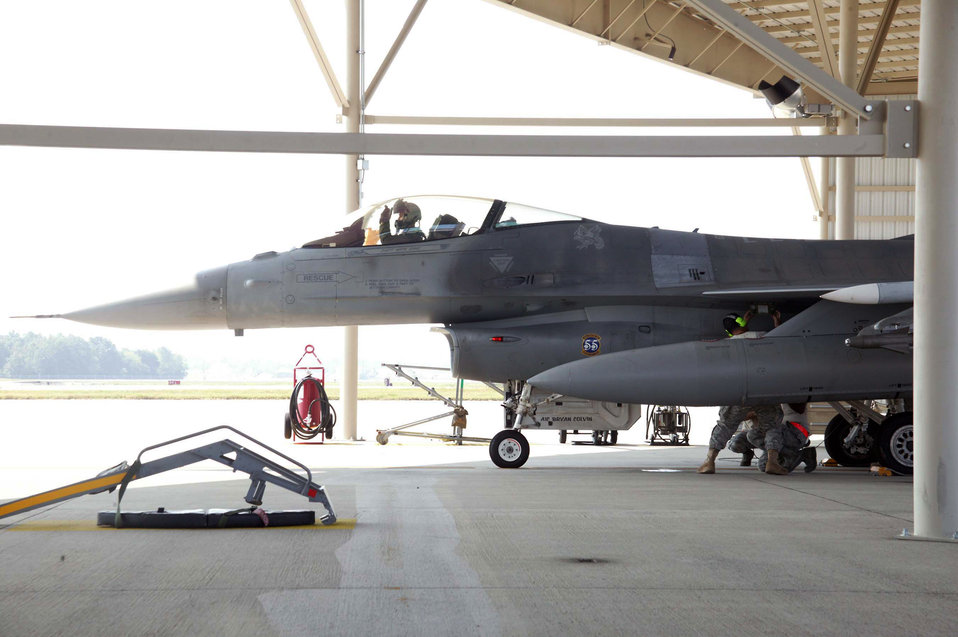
Shaw Airmen train with South Carolina Civil Air Patrol

Capt. Dave Snodgrass prepares for an F-16 Fighting Falcon for takeoff on an exercise scramble called Fertile Keynote Aug. 11 at Shaw Air Force Base, S.C. The exercise, with cooperation from the Civil Air Patrol, provided training for the alert maintenance crew and pilots for real-world situations. Captain Snodgrass is a 79th Fighter Squadron F-16 pilot.